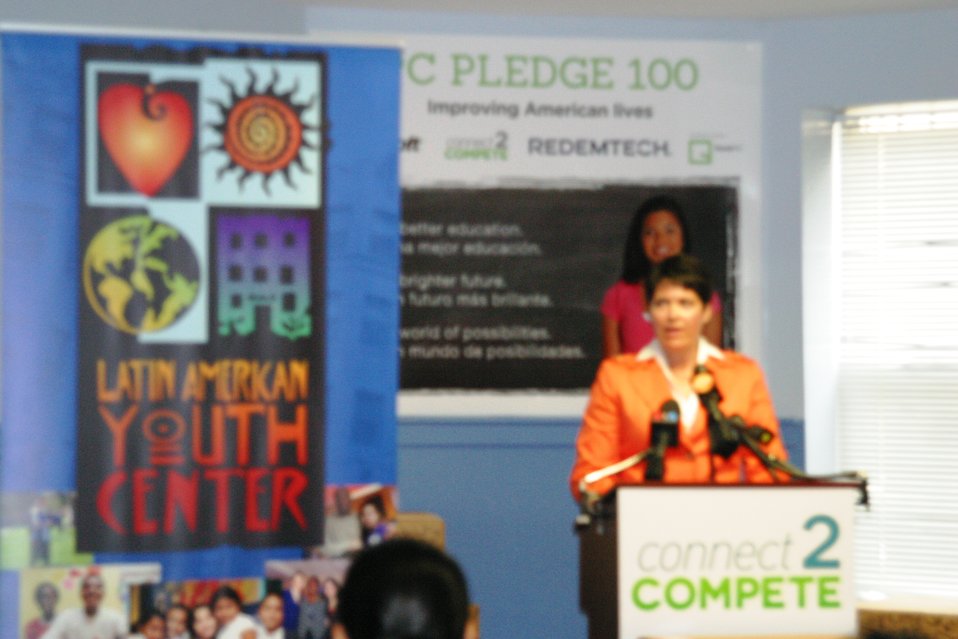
Connect 2 Compete: LULAC 8.7.12

Jill Vaske, Executive Vice President, Redemtech speaking at the League of United Latin American Citizens (LULAC), and the Latin American Youth Center (LAYC) to announce the launch of a nationwide computer recycling and donation effort to support C2C’s efforts to close the digital divide.